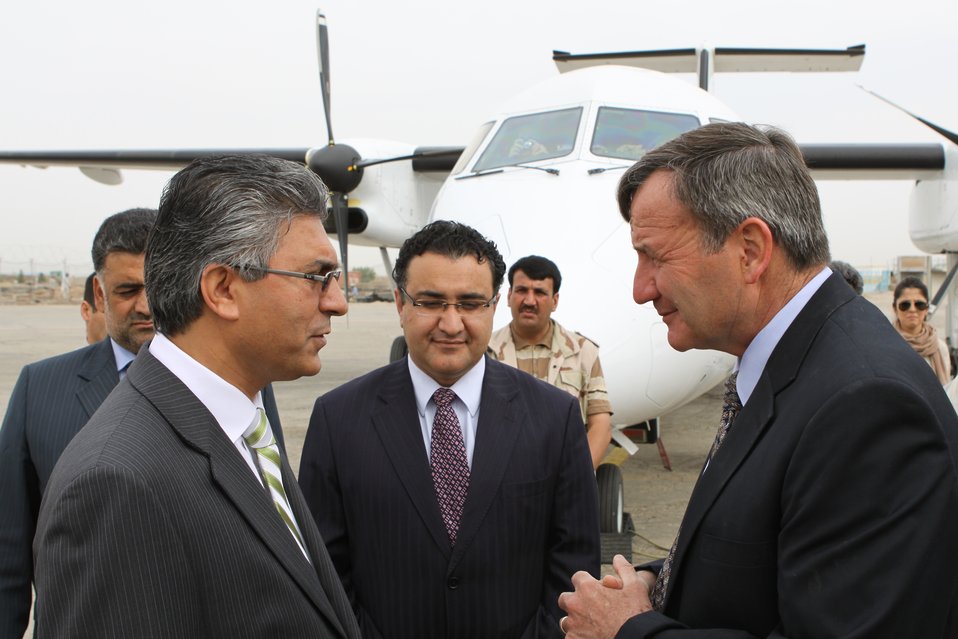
100525 Hirat Marble Conference 034